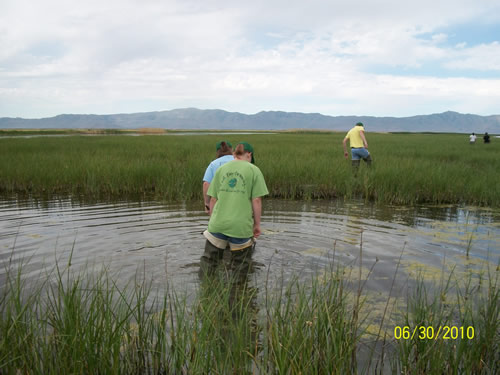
Bird Banding